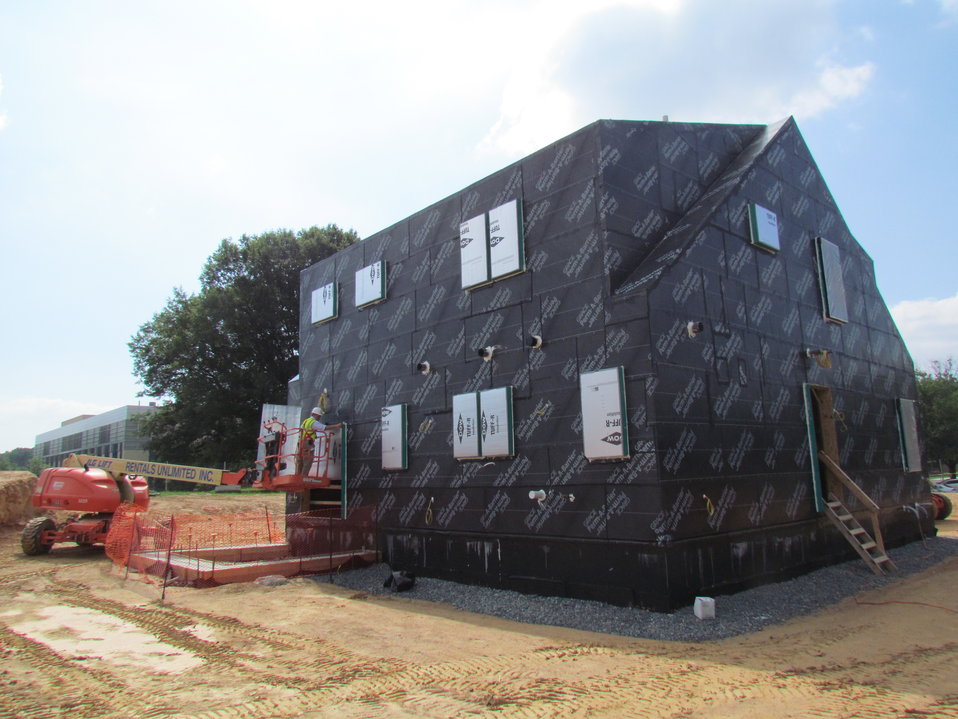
Net-Zero Energy Residential Test Facility - Photo showing the north and west sides of the facility with the exterior air/moisture barrier in place. The window openings are sealed with foil faced insulation to facilitate air leakage testing for the facility.